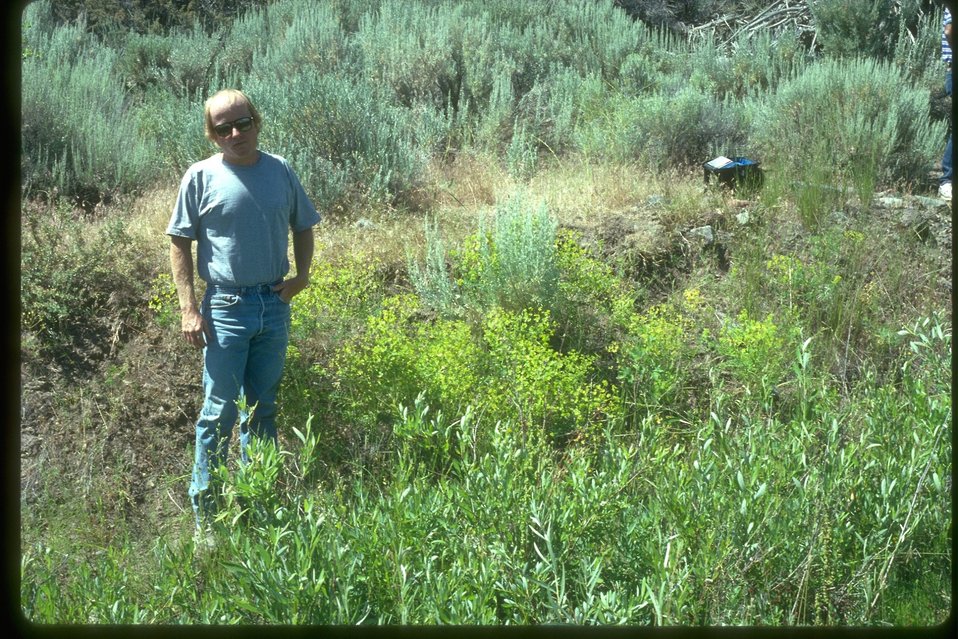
Man standing by leafy spurge patch.